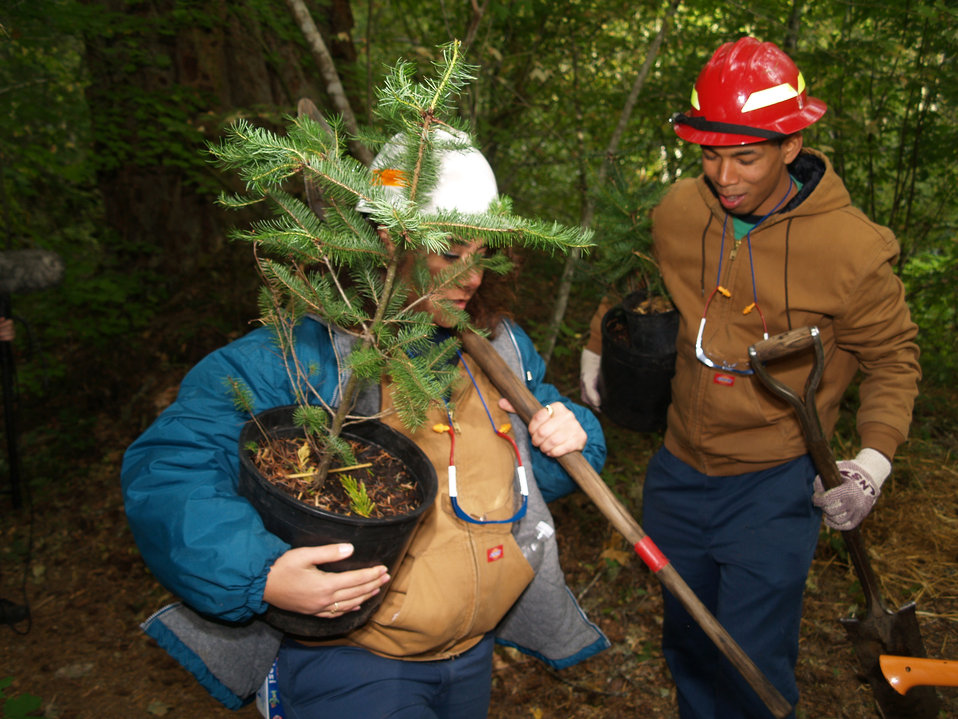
September 29, 2009. Estacada, OR. Timber Lake Job Corps Center students Ariel Scrogham (l) and Paul Miles (r) carry tools and seedlings to a streamside restoration project on the Clackamas River. The project enhances the spawning areas of native salmon on the river.